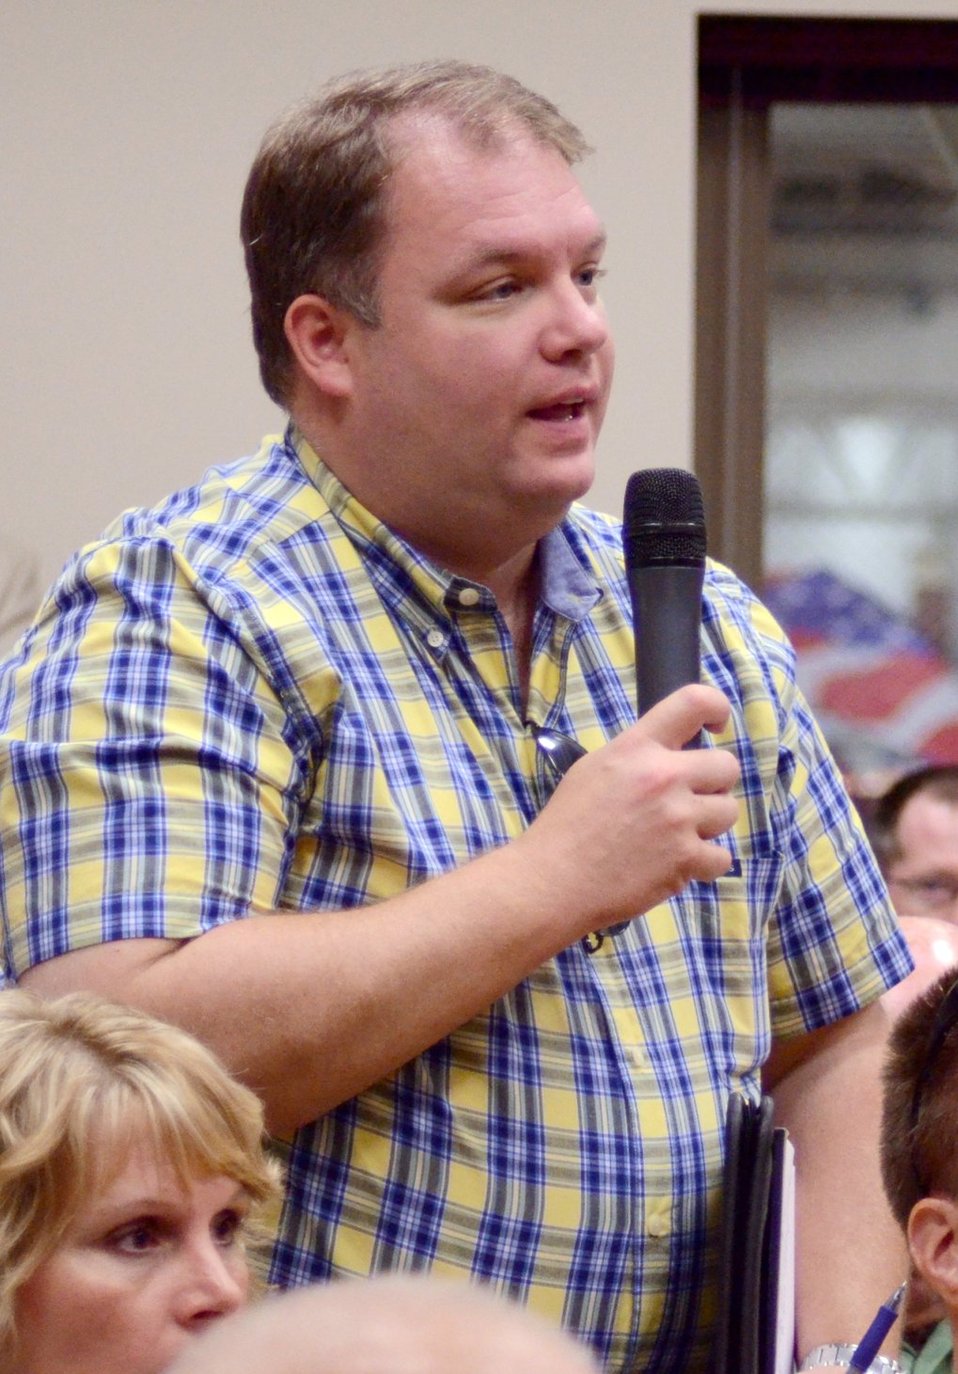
A member of the audience asks Agriculture Secretary Tom Vilsack speaks at the White House Rural Forum at the Wisconsin State Fair, in West Allis, WI, on Thursday, August 4, 2011, to businesses and community leaders, farmers and ranchers to explore ways federal, state and local officials can work together to improve economic conditions and create jobs. The forum is part of a series of White House Rural Roundtables that are being held across the country this summer with senior Administration officials.